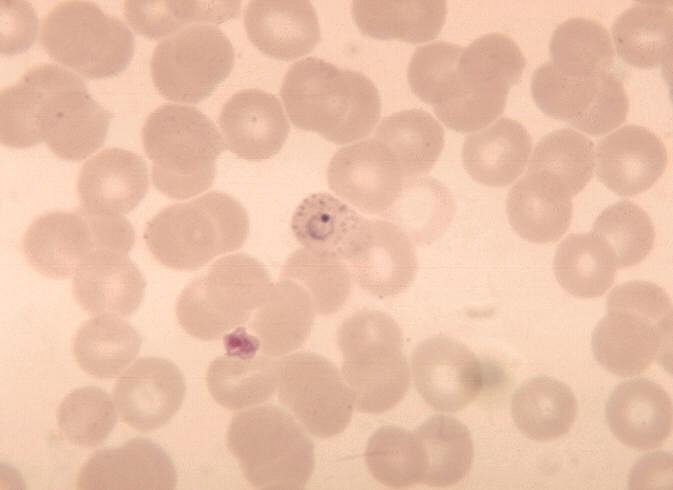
Plasmodium vivax ring. Stippling in erythrocyte.